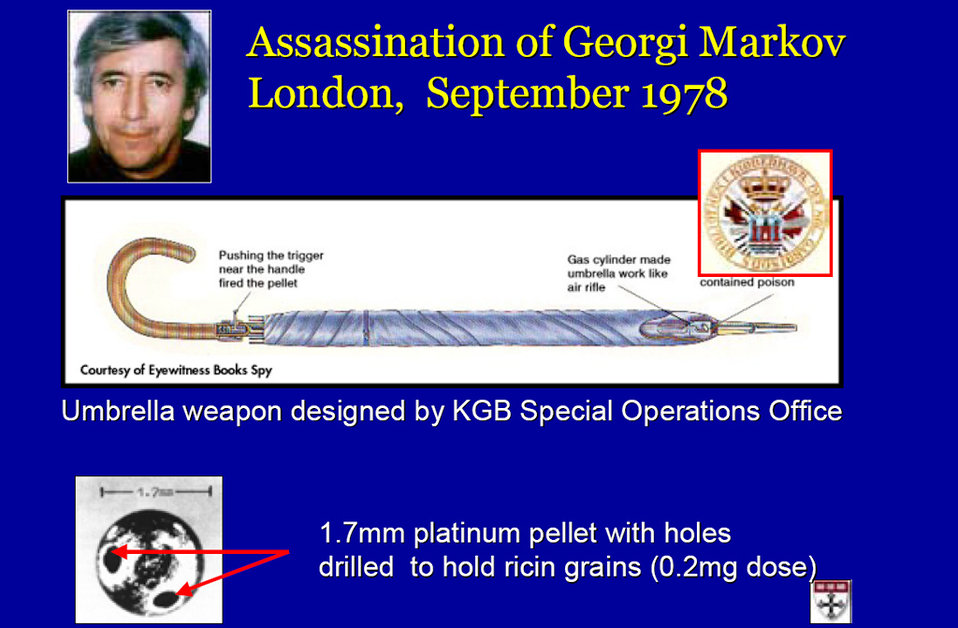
This presentation highlights the history, chemistry, and uses of ricin, a highly toxic poison made from castor beans.